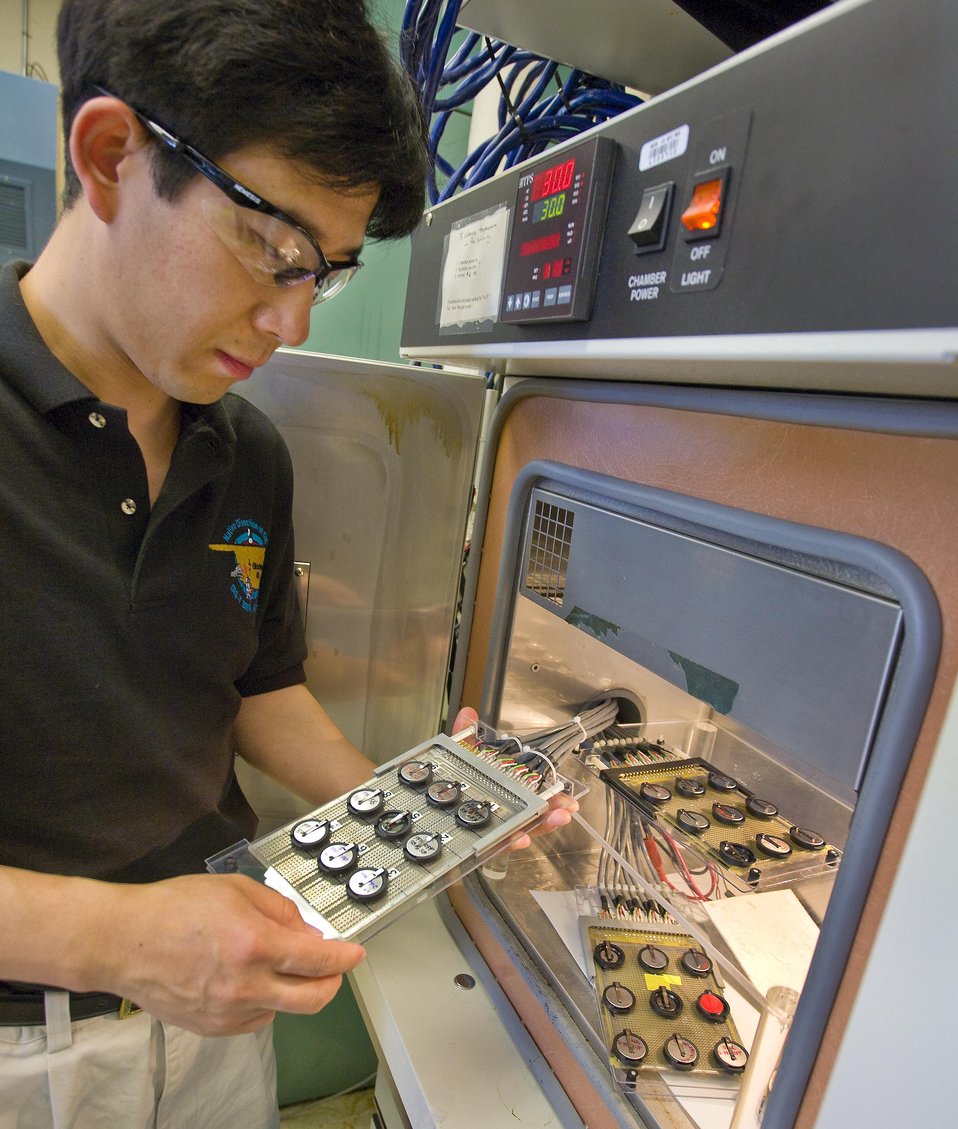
Lawrence Berkeley National Laboratory scientist inspects coin cell sized batteries that are being cycled in an environmental chamber.

Lawrence Berkeley National Laboratory is one of several major U.S. research institutions and industrial firms that form the Joint Center for Energy Storage Research, a public-private partnership which aims to overcome critical scientific and technical barriers and create new breakthrough energy storage technologies.